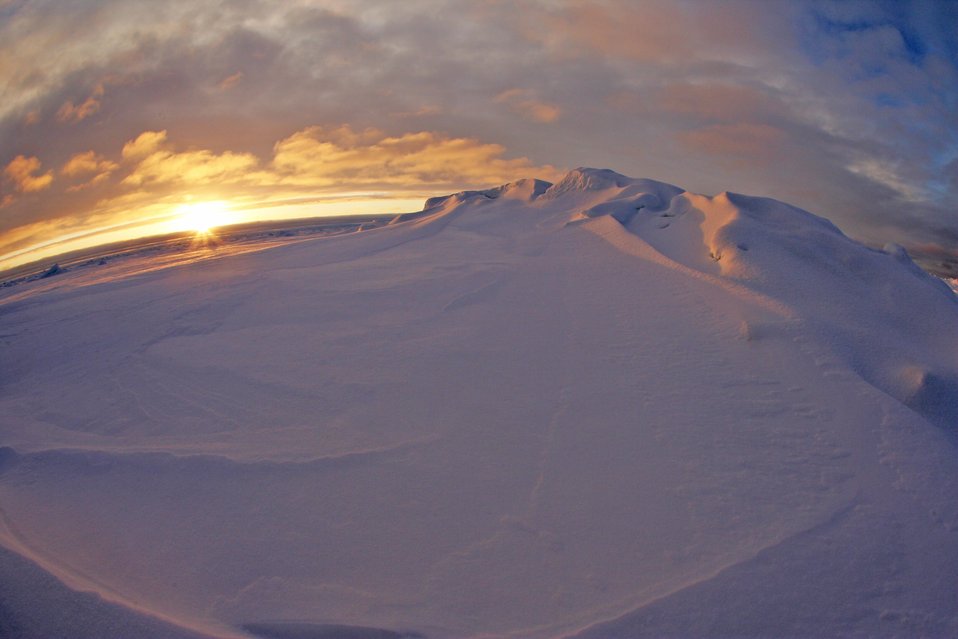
Arctic sunset.